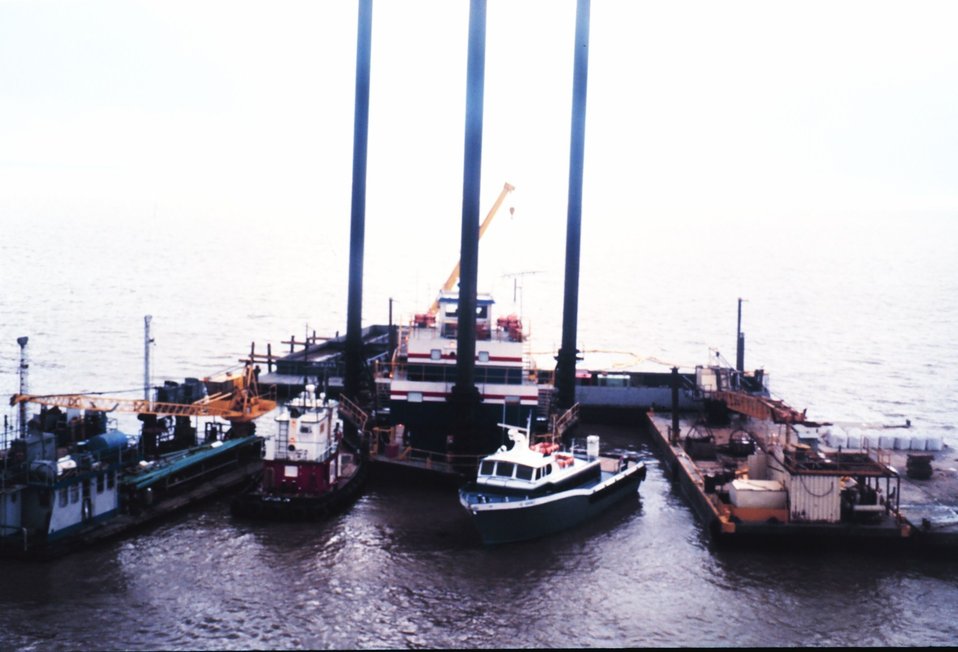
Dixon Bay well site being capped after blowout and oil spill